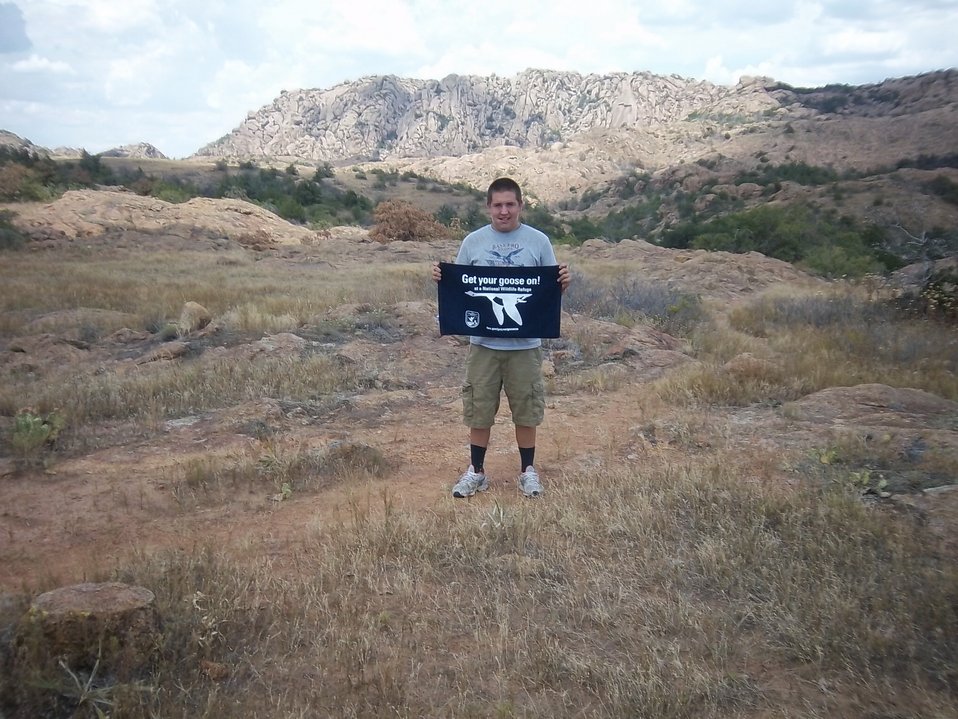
Get Your Goose On!

Wichita Mountains National Wildlife Refuge in Oklahoma.